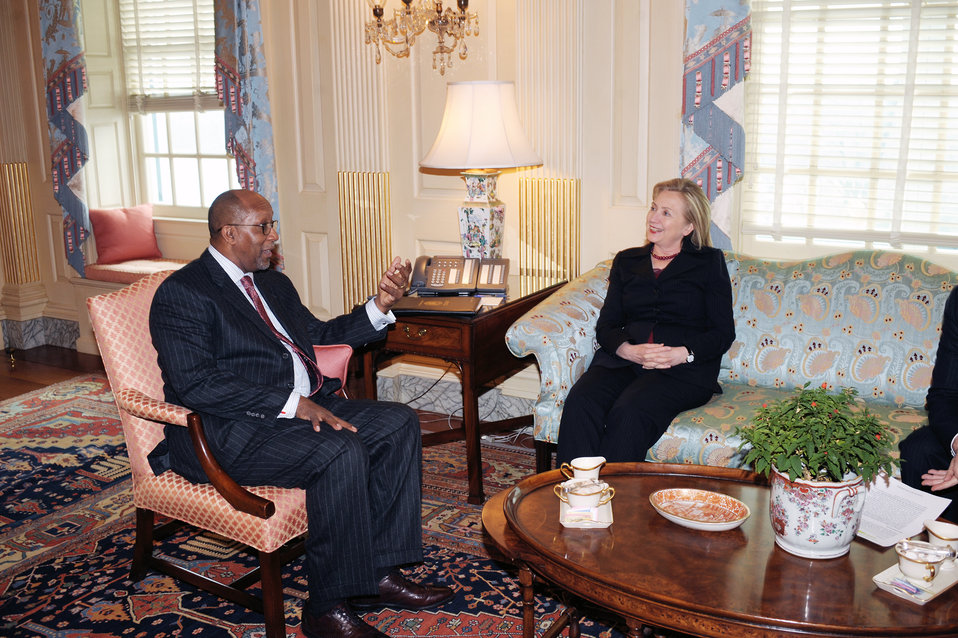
Secretary Clinton Meets With U.S. Trade Representative Kirk

U.S. Secretary of State Hillary Rodham Clinton meets with U.S. Trade Representative Ron Kirk at the U.S. Department of State in Washington, D.C., on February 22, 2011.